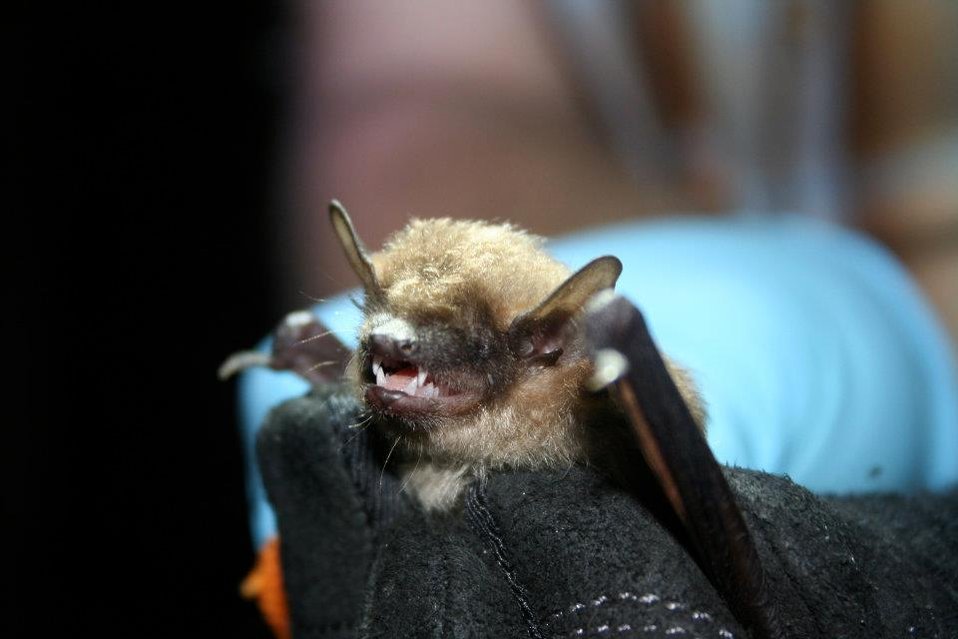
Big brown bat (Eptesicus fuscus)